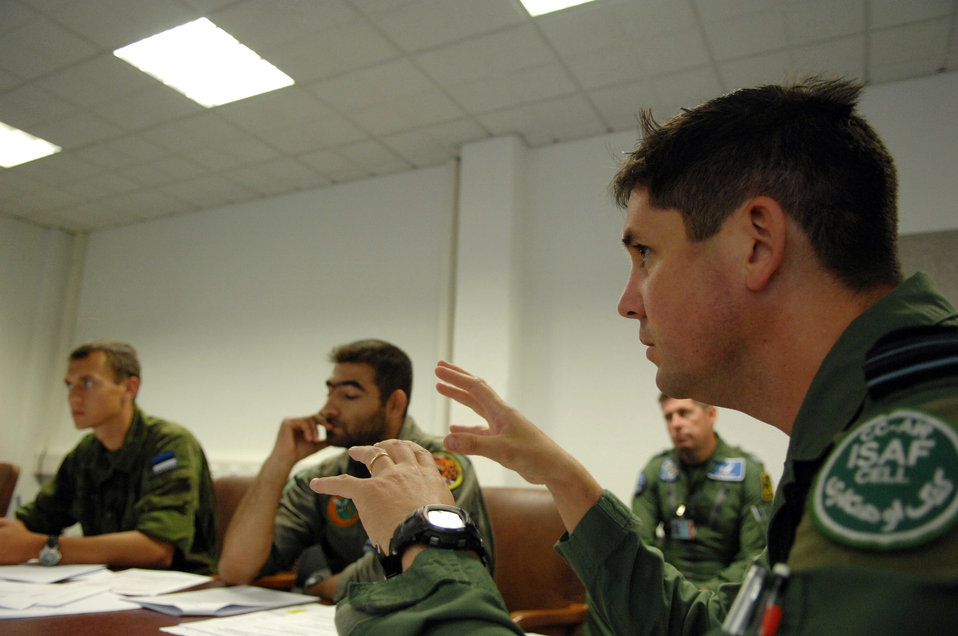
Air ground operations school helps NATO train Estonian, Swedish troops for deployment

Royal Air Force Squadron Leader Keven Gambold (right) from the NATO CC-Air Ramstein International Security Assistance Force Cell conducted pre-deployment briefings for forward air controllers who call in air strikes during close-air-support operations. Two Estonian air force members and a Swedish army ranger spent a week in pre-deployment briefings, computer simulation, and field training prior to deployment thanks to the joint efforts of the staff at the USAFE AGOS and the ISAF Cell Aug. 17- 21.